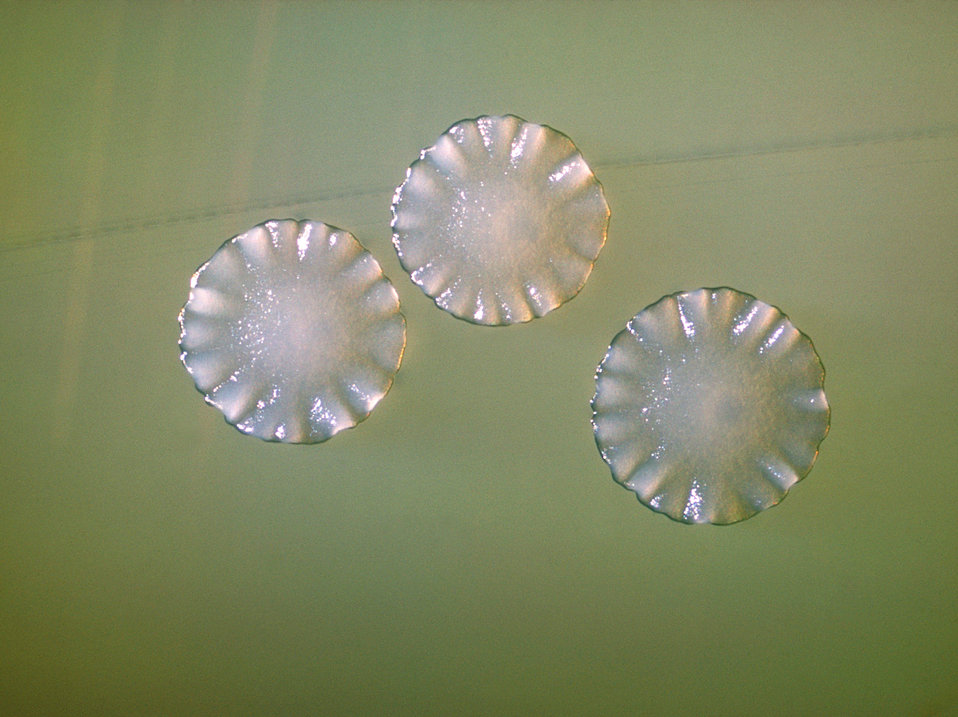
Plate culture of Actinomyces sp., a gram-positive opportunistic pathogen that is normally found in the oral cavity.